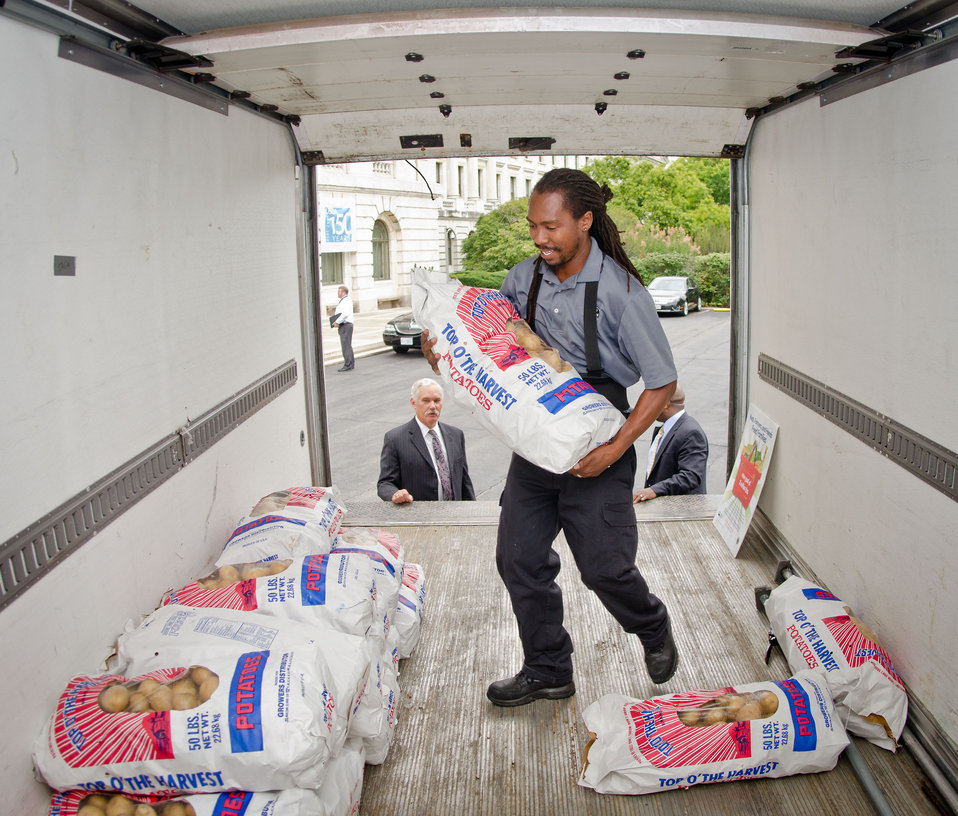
DC Central Kitchen Fleet Coordinator/Transportation Driver Anthony Turner adjusts the load of potatoes in one of the kitchen’s trucks. Agriculture Under Secretary Farm and Foreign Agriculture Service (FFAS) Michael Scuse (left) donated 1,000 pounds of potatoes to DC Central Kitchen, in participation with the Feds Feed Families Food Drive, on Monday August 20, 2012 in front of the Agriculture headquarters in Washington, D.C. FFAS Deputy Under Secretary Karis Gutter (right) helped with the transfer of 20 50-pound bags. Under Secretary Scuse, a farmer himself purchased and loaded his pick-up this weekend with half a ton of potatoes at nearby Wicks farm, in Delaware. Secretary Scuse farms 1,700 acres of corn, soybeans and wheat. He says that this is the first of many more donations this year. When asked when the potatoes will get to people’s mouths, he replied, “Couple hours. Once I get it to the kitchen, they have volunteers there, we work off volunteers, (and) if it wasn’t for the volunteers we would not run. Once I get it back, the volunteers will cut it up, shave them, dice or whatever they are going to do, they are going to put it into soup, or something; they (the recipients) will get it by tonight.”